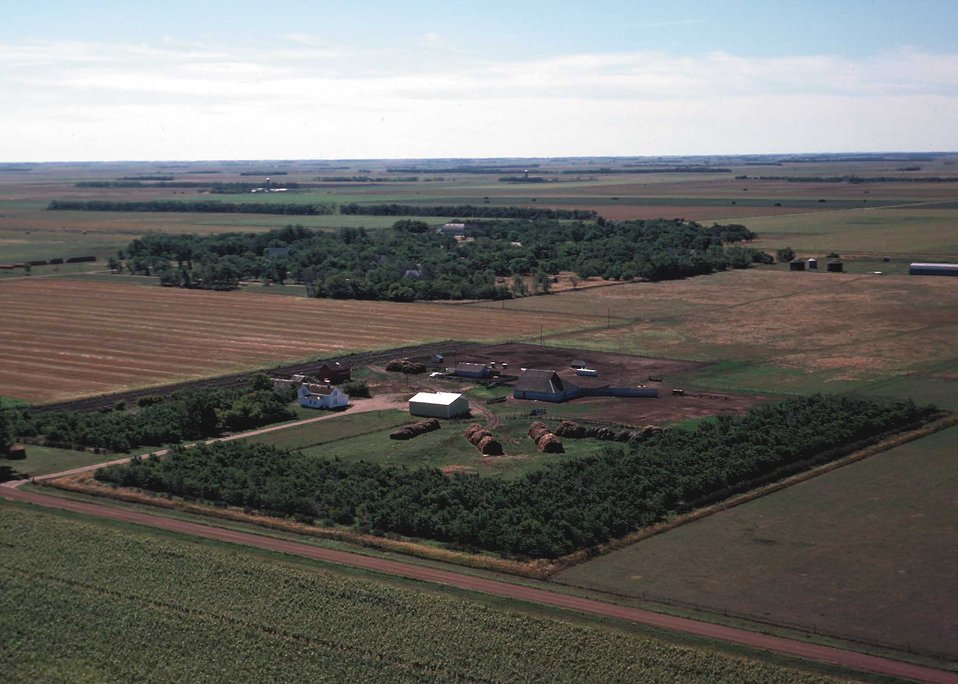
A windbreak protects this farmstead from harsh winter winds and provides habitat for wildlife.